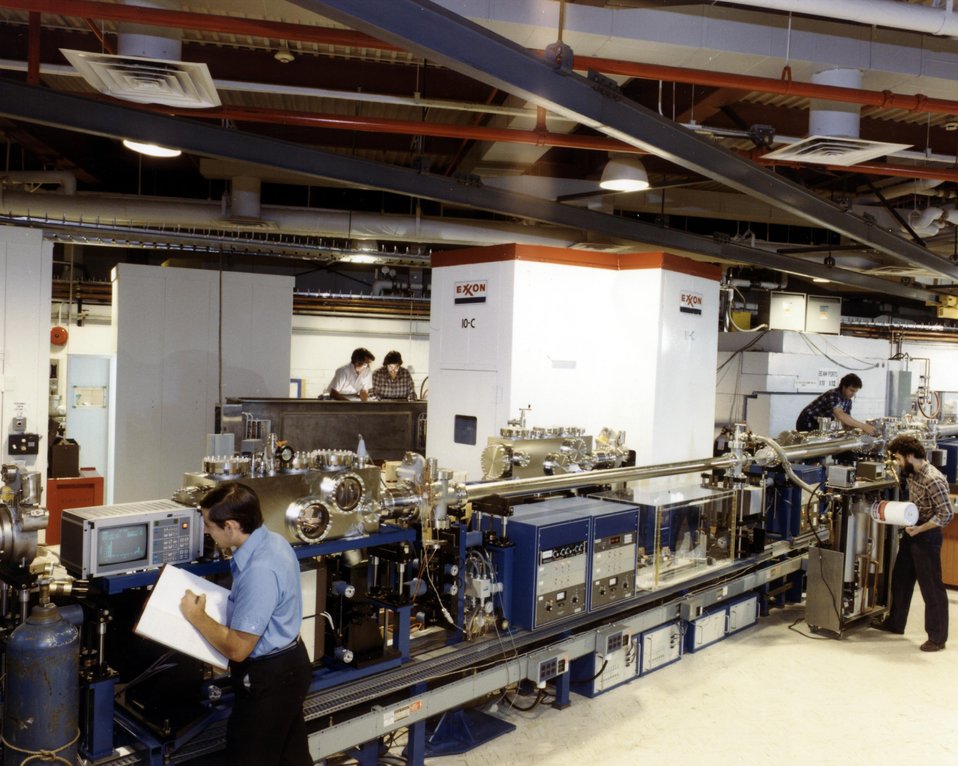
VIEW OF EXXON'S X-RAY SCATTERING BEAM LINES.

THE NSLS WILL ACCELERATE AND STORE ELECTRONS AT A SPEED CLOSE TO THAT OF LIGHT TO PRODUCE AN ENTIRE SPECTRUM OF RADIATION, FROM INFRARED THROUGH X-RAYS, FOR UNIQUE APPLICATIONS IN MANY FIELDS OF SCIENCE. THE FACILITY WILL CONSIST OF TWO ELECTRON STORAGE RINGS. THE SMALLER RING WILL ACCELERATE ELECTRONS TO 700 MILLION ELECTRON VOLTS TO PRODUCE ULTRAVIOLET RADIATION, AND THE LARGER RING WILL ACCELERATE ELECTRONS TO 2500 MILLION ELECTRON VOLTS TO PRODUCE X-RAYS. THE ULTRAVIOLET LIGHT CAN BE USED TO STUDY: CHEMICAL REACTIONS AND STRUCTURES, THE PROPERTIES OF PURE METALS, ALLOYS, AND INSULATING MATERIALS, AND THE TRANSFER OF ENERGY IN BIOLOGICAL SYSTEMS. X-RAY LITHOGRAPHY MAY BE USED BY THE ELECTRICAL INDUSTRY IN THE PRODUCTION OF MICROSCOPIC PRINTED CIRCUITS FOR COMPUTERS AND MICROPROCESSORS. X-RAY MICROSCOPY COMPLEMENTS ELECTRON MICROSCOPY, PERMITTING OPERATIONS THAT WOULD BE IMPOSSIBLE WITH AN ELECTRON MICROSCOPE.